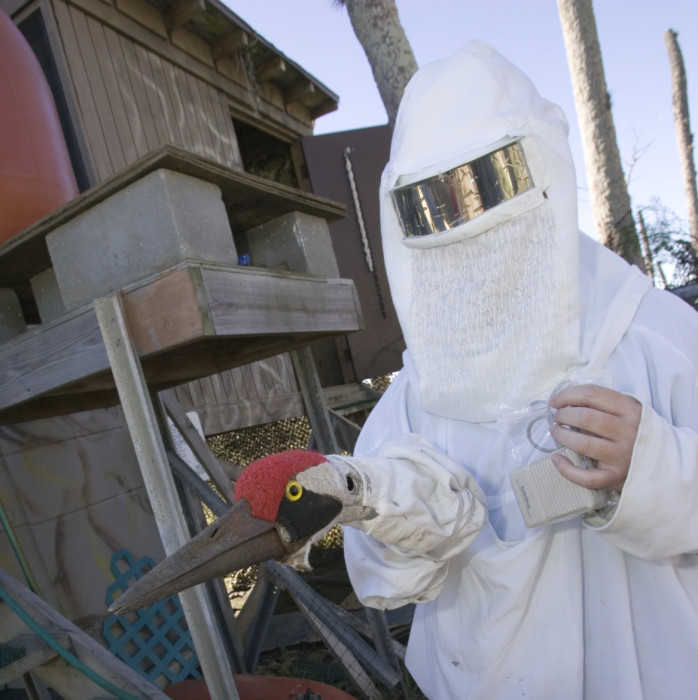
Costumed Human

Researchers caring for and raising young whooping cranes wear full-length costumes to look like adult whooping cranes and prevent the birds from attaching to humans as their parents (imprinting).